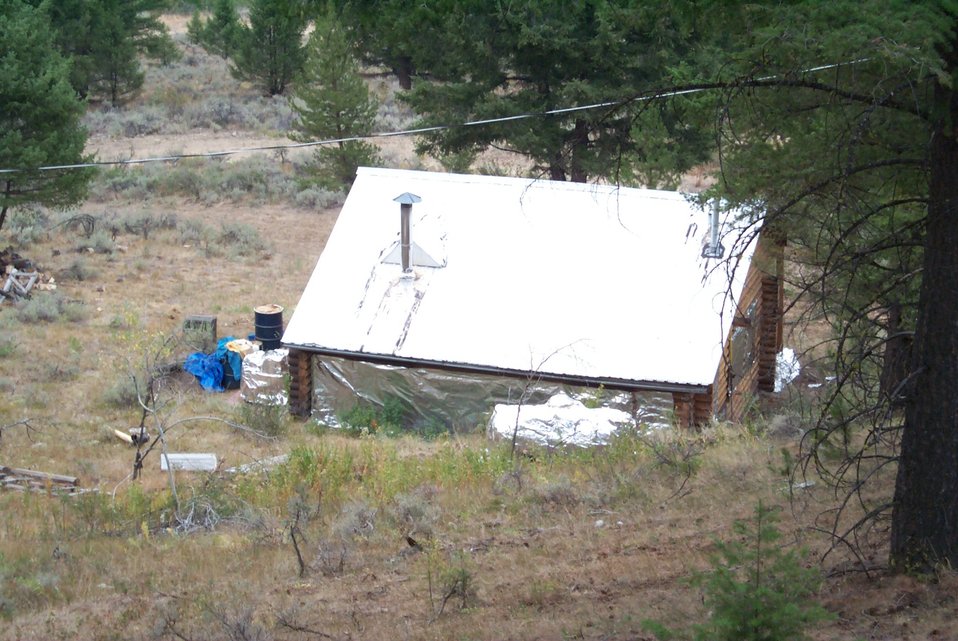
Fire retardant measures Urban interface Fire Clearwater Fire Salmon Field Office USRD Upper Snake River District